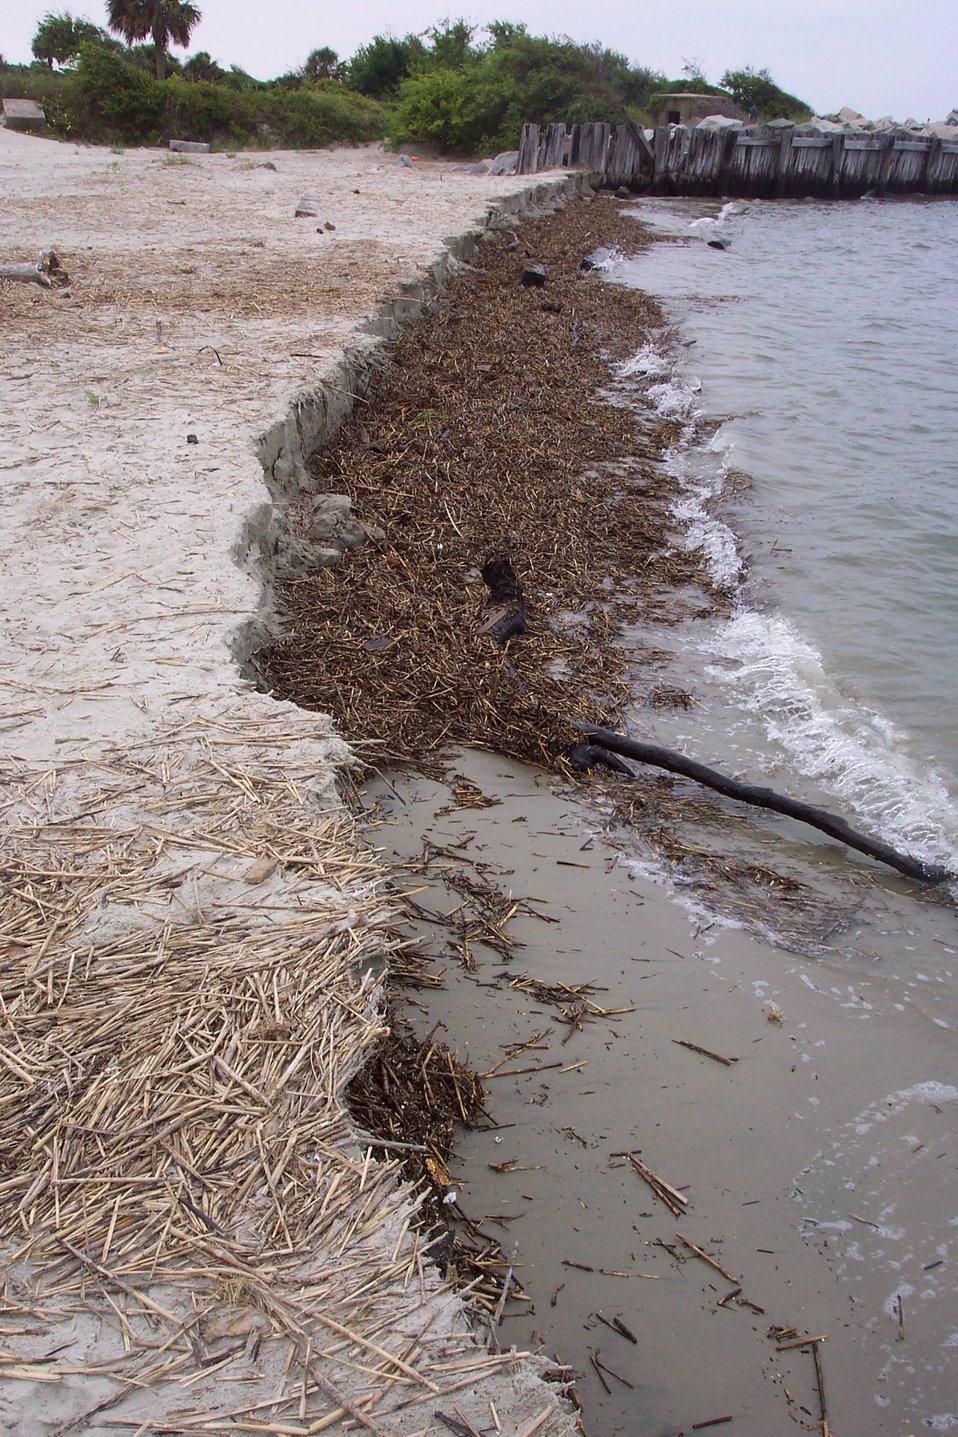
Erosion near Fort Moultrie.